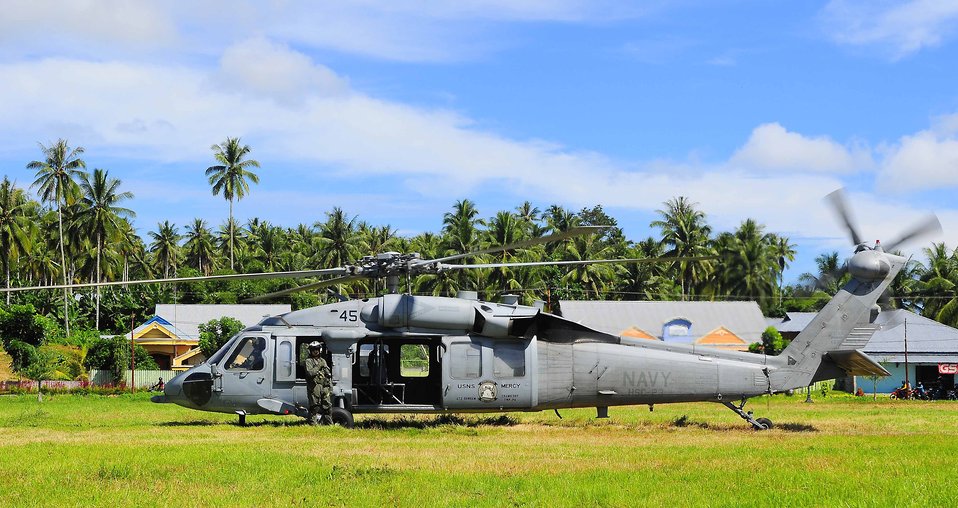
An Aircrewman Stands in Front of an MH-60S Knighthawk Helicopter

An aircrewman from Helicopter Sea Combat Squadron 23 “Wild Cards” stands in front of an MH-60S Knighthawk helicopter in Ternate, Indonesia, supporting ship-to-shore transfers during Pacific Partnership 2010 operations on July 23, 2010. Pacific Partnership 2010 is the fifth in a series of annual U.S. Pacific Fleet endeavors conducted in Indonesia as a disaster relief exercise aimed at strengthening regional partnerships.